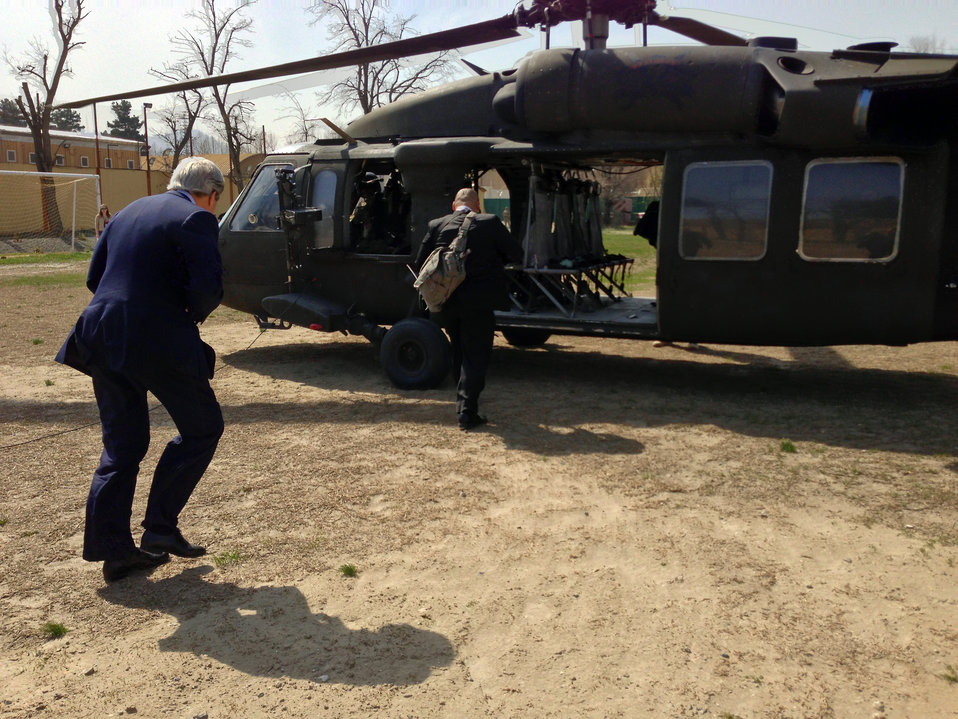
Secretary Kerry Boards a Helicopter

U.S. Secretary of State John Kerry walks toward a Blackhawk helicopter as he prepares to leave Kabul, Afghanistan, following an unannounced visit to the country, March 26, 2013.